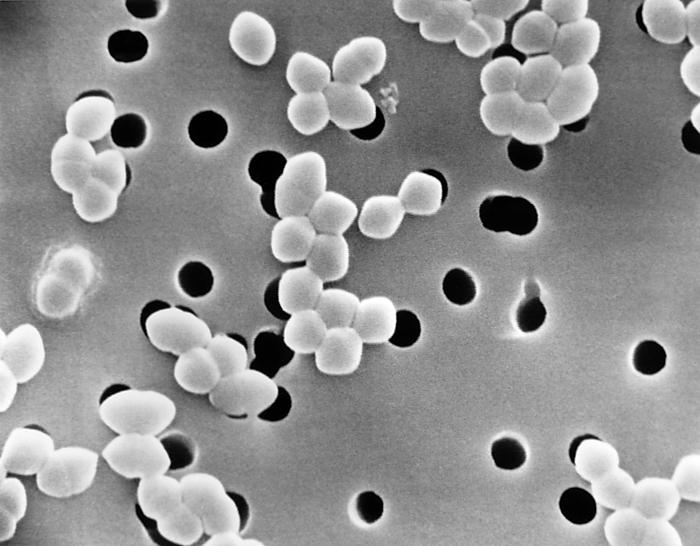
Scanning Electron Micrograph of Enterococcus species